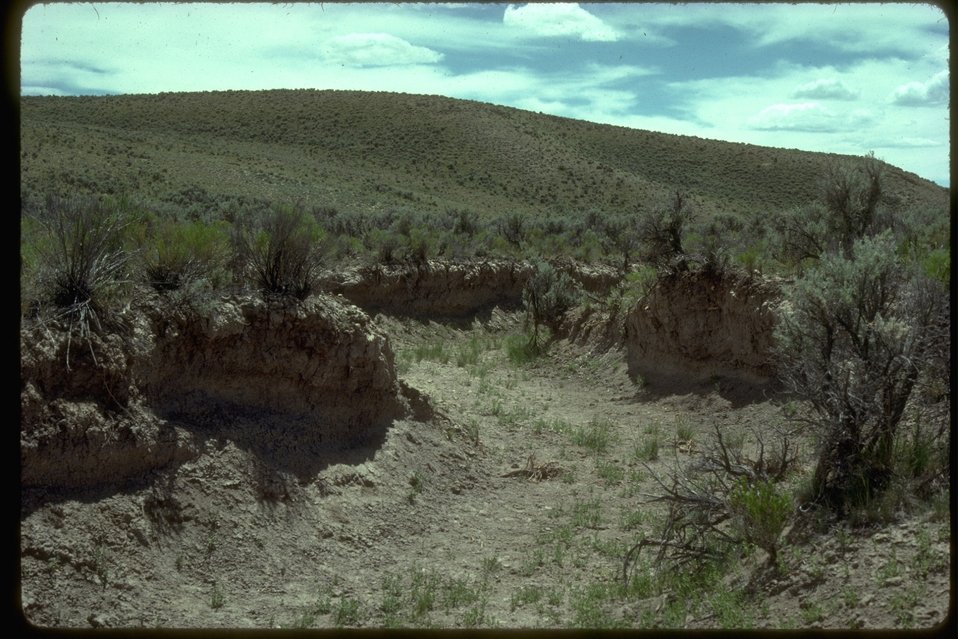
Eroded Stream Channel in southeastern Oregon near the Sheldon Refuge.